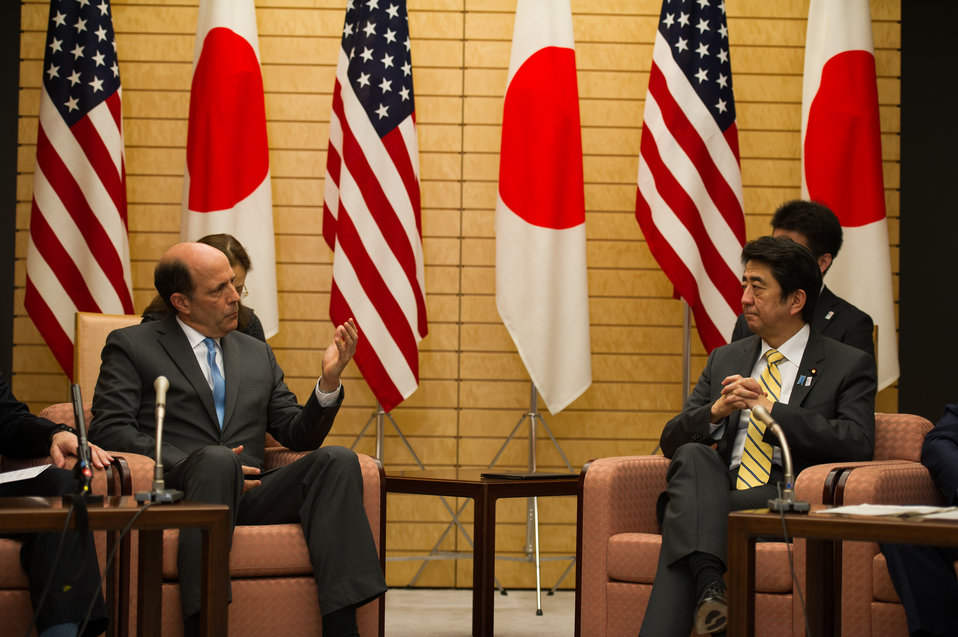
Ambassador Roos With Japanese Prime Minister Abe at the Joint Press Announcement of the Okinawa Consolidation Plan

U.S. Ambassador to Japan John V. Roos speaks with Japanese Prime Minister Shinzo Abe at the joint press announcement of the Okinawa Consolidation Plan in Tokyo, Japan, on April 5, 2013.